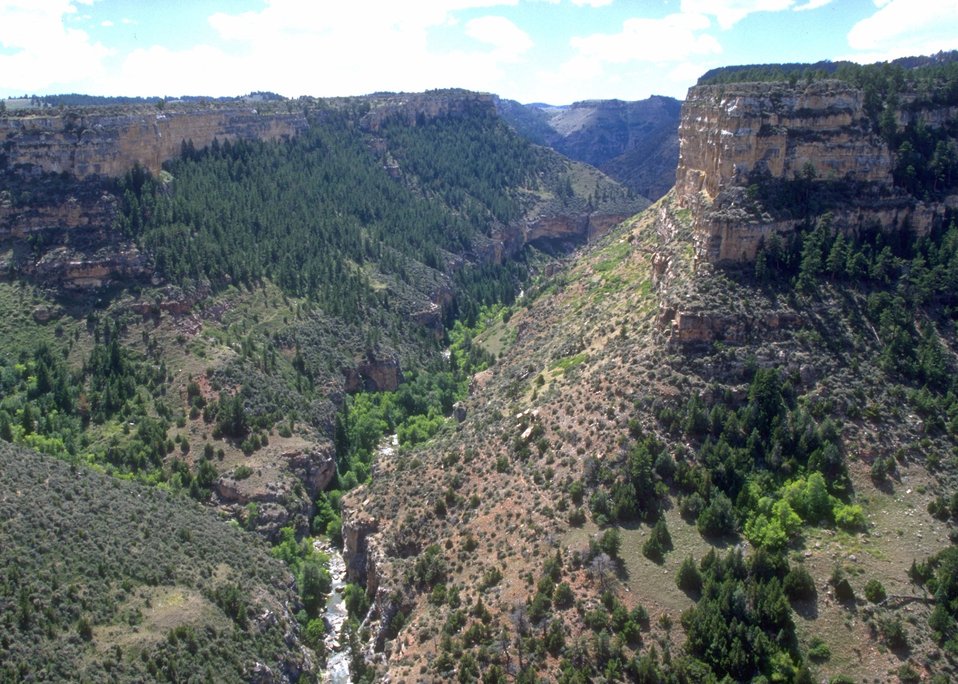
View of Hole In The Wall (middle fork of Powder River), Buffalo Field Office.